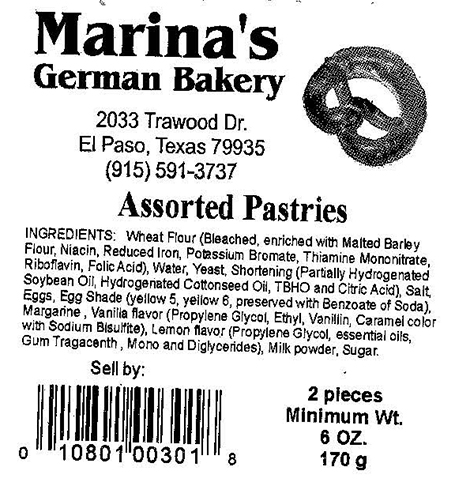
RECALLED – Pastry products

November 20, 2013 – Product Recall – Marina's German Bakery Issues Allergy Alert on Undeclared Almonds, Walnuts, and Hazelnuts in Pastry Products.